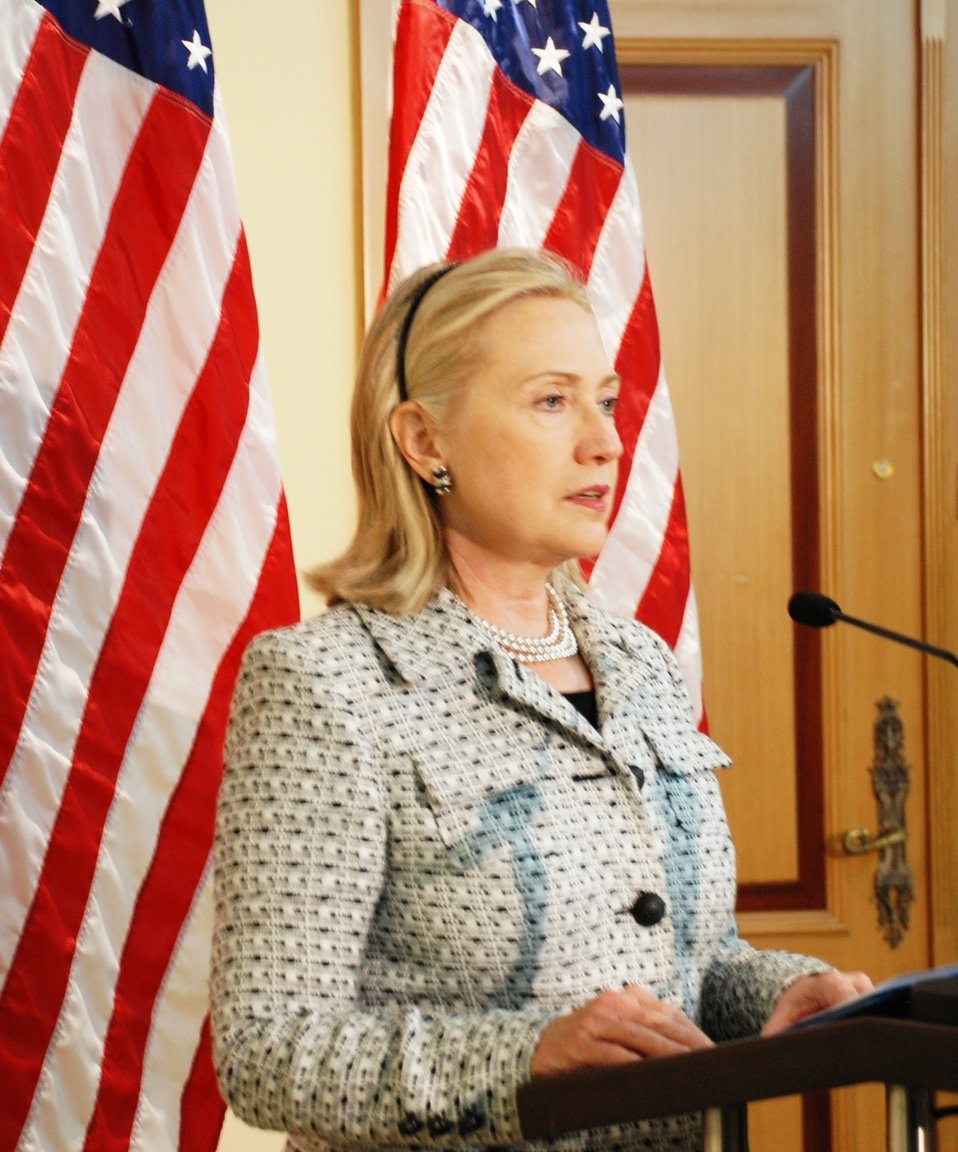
Secretary Clinton Addresses Reporters After Fourth Libya Contact Group Meeting

U.S. Secretary of State Hillary Rodham Clinton addresses reporters after participating in the fourth Libya Contact Group Meeting at the Çırağan Palace in Istanbul, Turkey, on July 15, 2011.